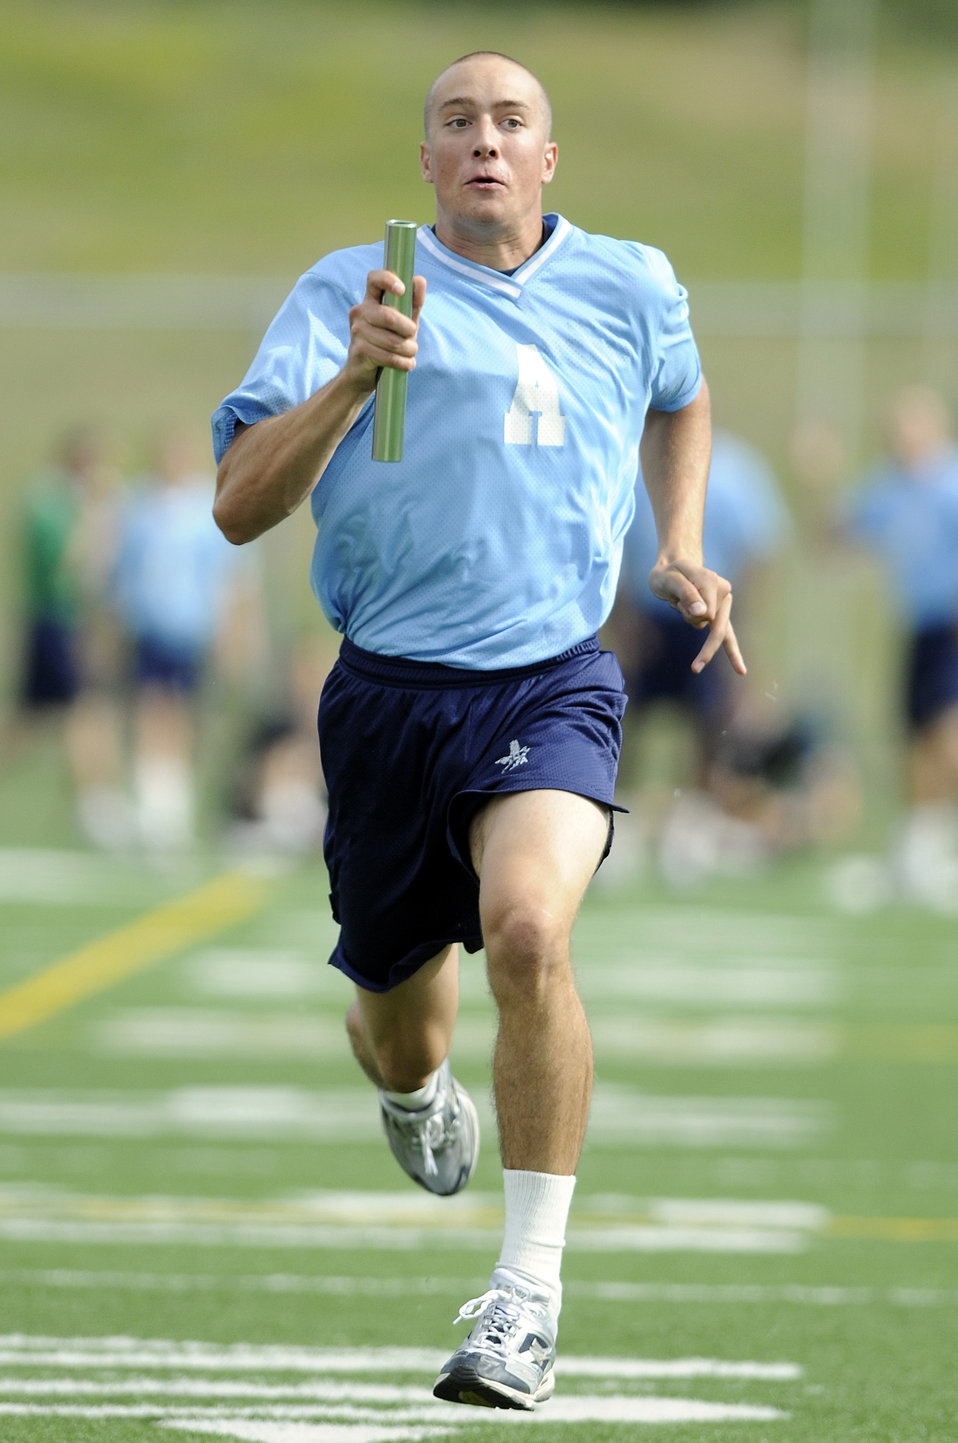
Class of 2013 Field Day

Basic cadet trainee Brandon Hirneise of the U.S. Air Force Academy Class of 2013 participates in a relay during Field Day activities here today. About 1,344 trainees competed in various athletic events during Field Day, including tug of war, log relays, steeple chase and sprint relays. Basic cadet training started June 25 and continues through Aug. 1. The new cadets are in their first month of training and are learning about Air Force heritage, honor, discipline and Air Force core values, in addition to improving physical
fitness. The fall academic semester begins Aug. 6.